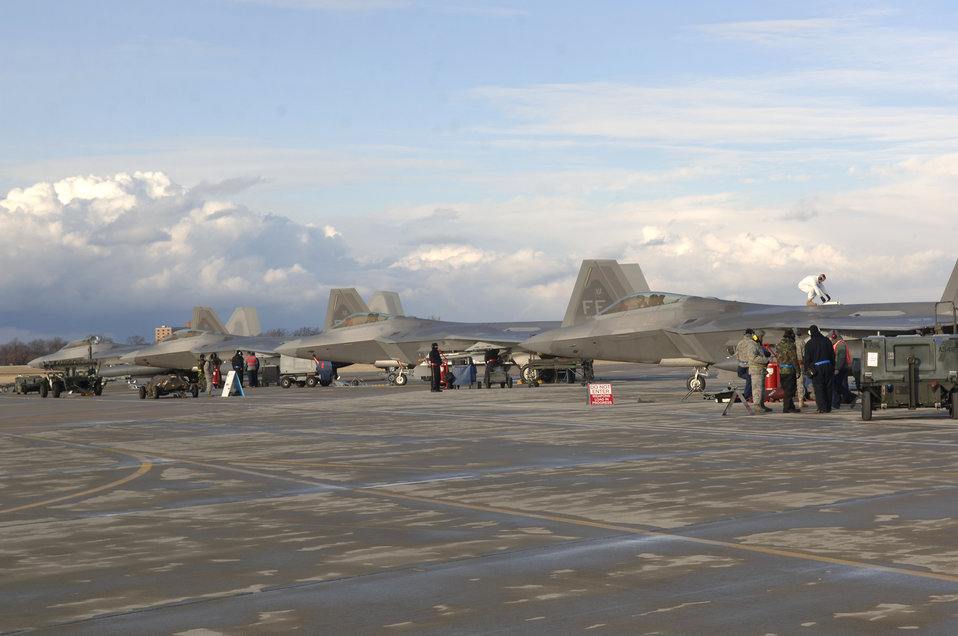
Langley Operational Readiness Exercise

Airmen and people from the 1st Fighter Wing prepare aircraft before generating F-22 Raptors during an operational readiness exercise Jan. 8, 2011, at Joint Base Langley Eustis, Va. The 1st Fighter Wing, 633rd Air Base Wing and 192nd Fighter Wing tested their readiness ability over a two-day period.